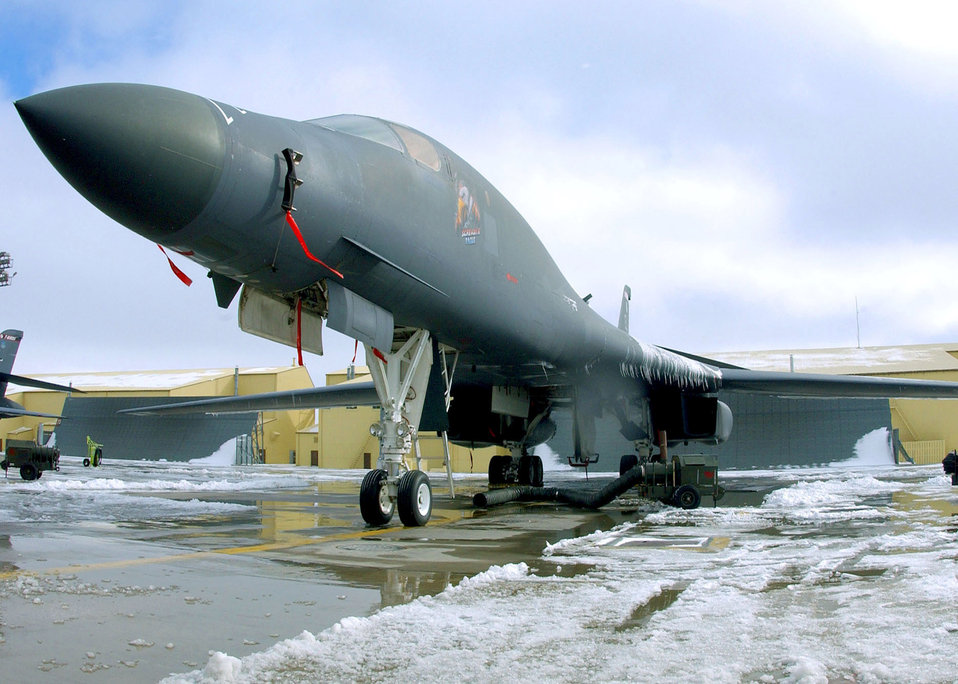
Ice bird

ELLSWORTH AIR FORCE BASE, S.D. -- A B-1B Lancer sits on display during the family deployment line here Oct. 31. The line is organized by Ellsworth's family support center and gives family and friends the chance to see what the deployment process is like.